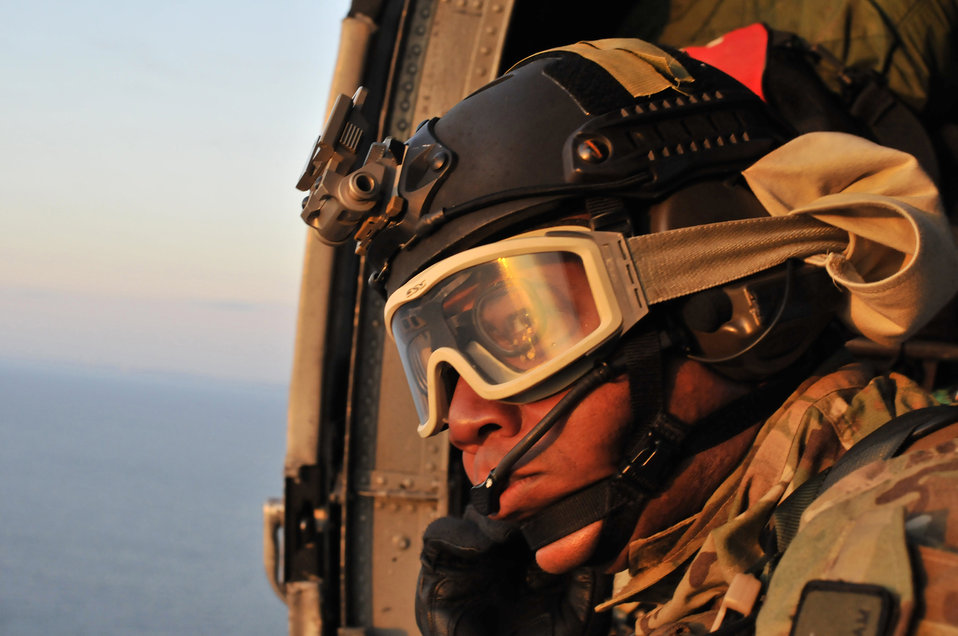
One last time...

Airmen from the 920th Rescue Wing at Patrick Air Force Base, Fla., have been tasked with search-and-rescue and range-clearing missions for the shuttle program since 1981. Shown are photos from recent shuttle support missions.